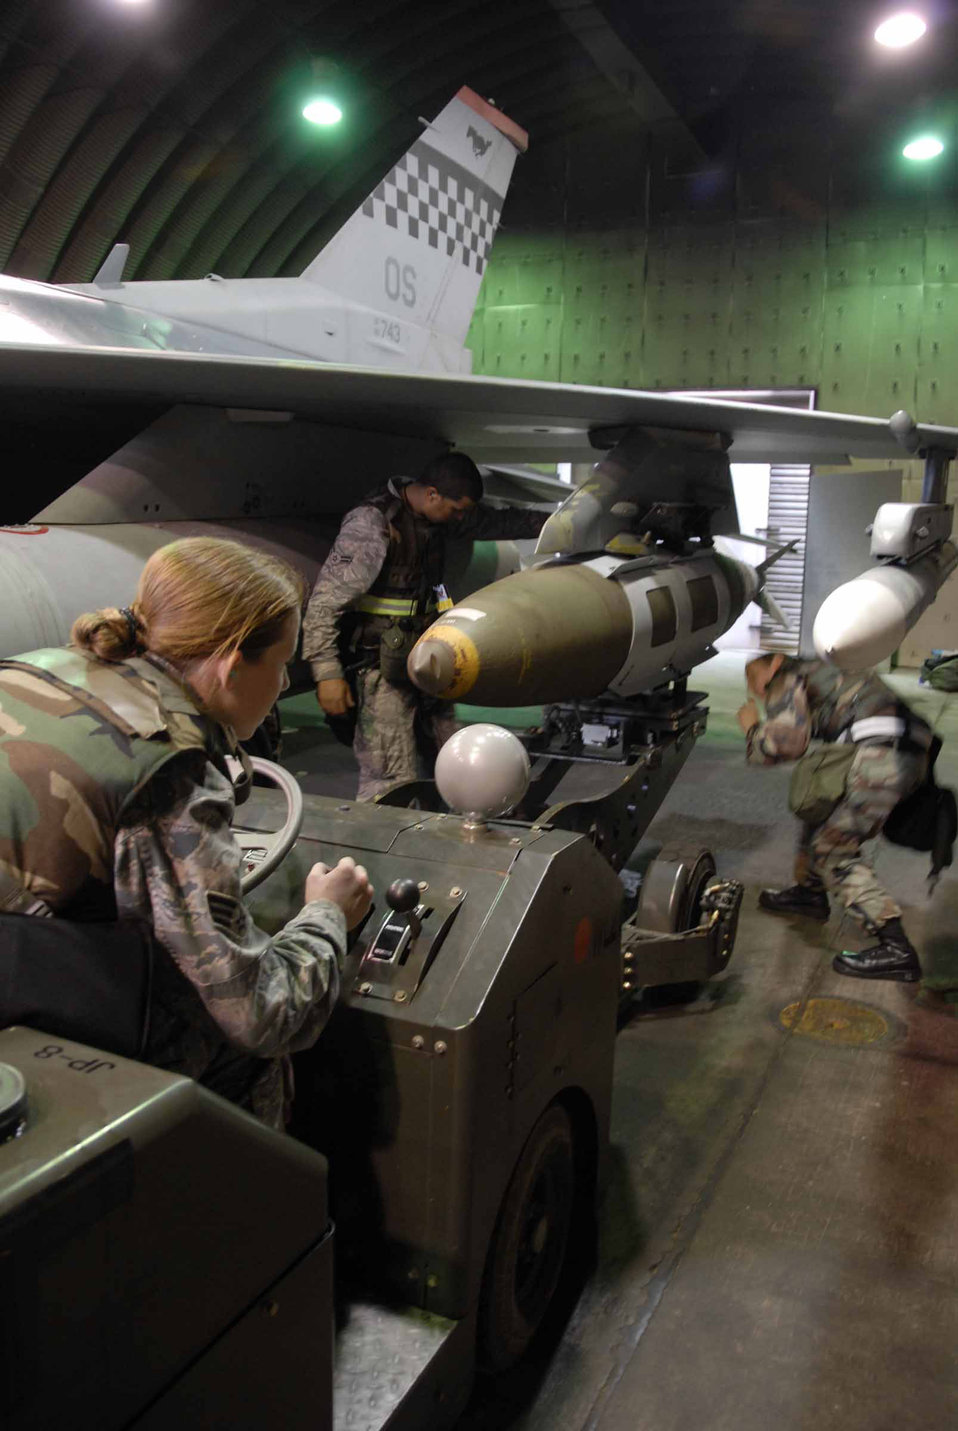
Osan exercise tests Airmen

Senior Airman Brooke Turnipseed (left to right), Airman 1st Class Justin Campbell and Staff Sgt. Dominique Rubisch work together to download a live joint direct attack munitions from an F-16 Fighting Falcon during the base-wide exercise July 21 at Osan Air Base, South Korea. The operational readiness exercise tests the Osan AB Airmen's ability to execute combat operations, receive follow-on forces and defend the base from attack. The Airmen are all 51st Aircraft Maintenance Squadron weapons loaders.